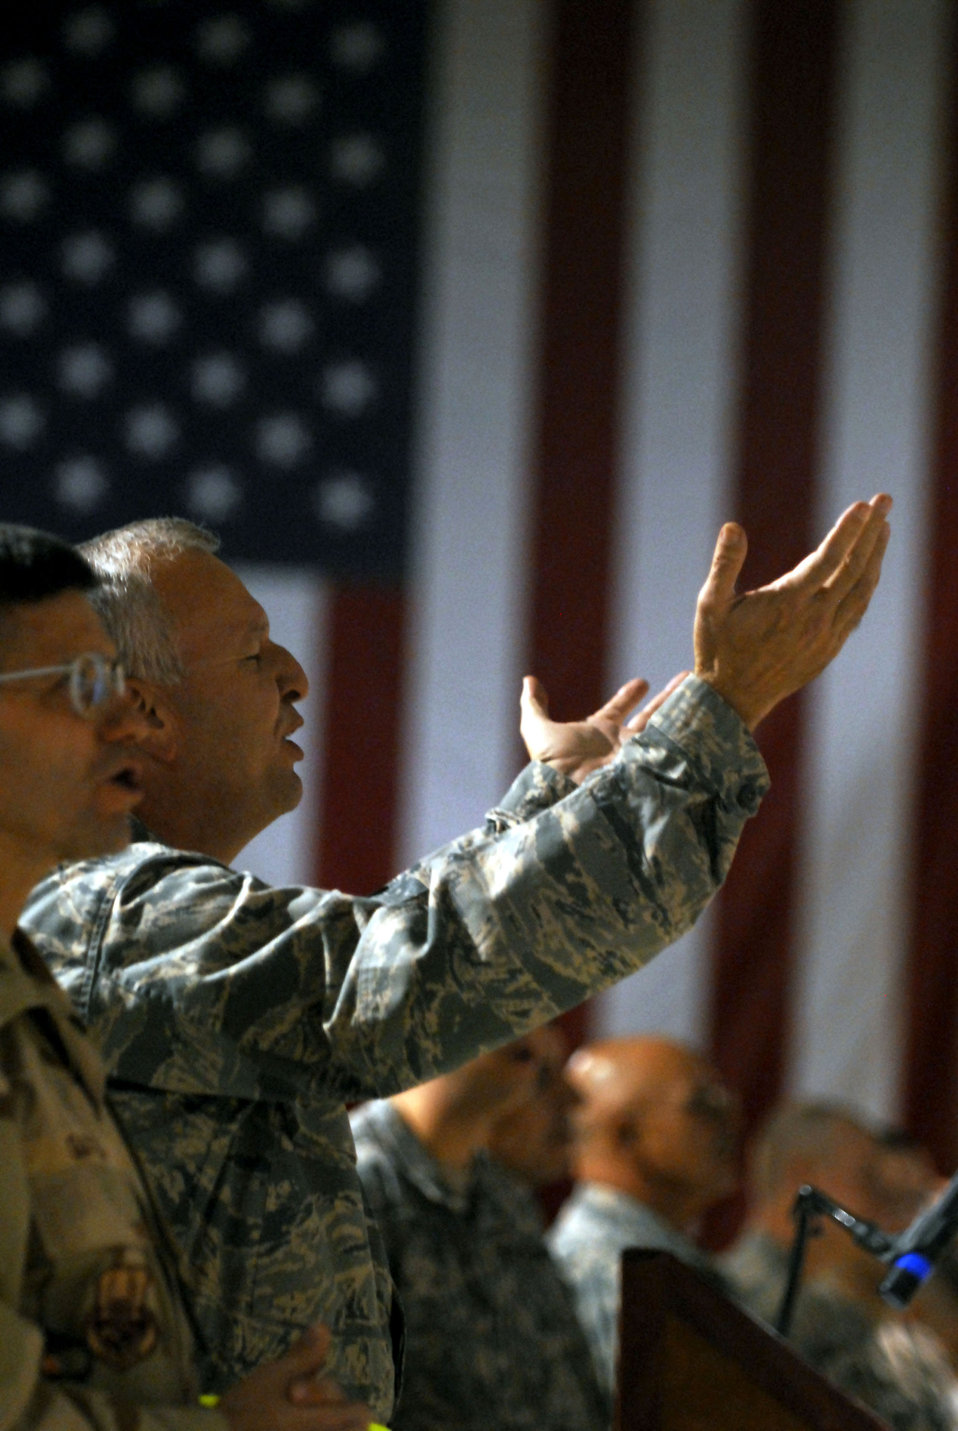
Veteran hope

Lt. Col. Steven West sings songs of praise with fellow servicemembers at an event featuring inspirational speaker Dave Roever Nov. 26 at Balad Air Base, Iraq. Mr. Roever, a disabled Vietnam War veteran, delivered a message of hope and encouragement to servicemembers. Colonel West, the 332nd Air Expeditionary Wing chaplain, is deployed from Whiteman Air Force Base, Mo.